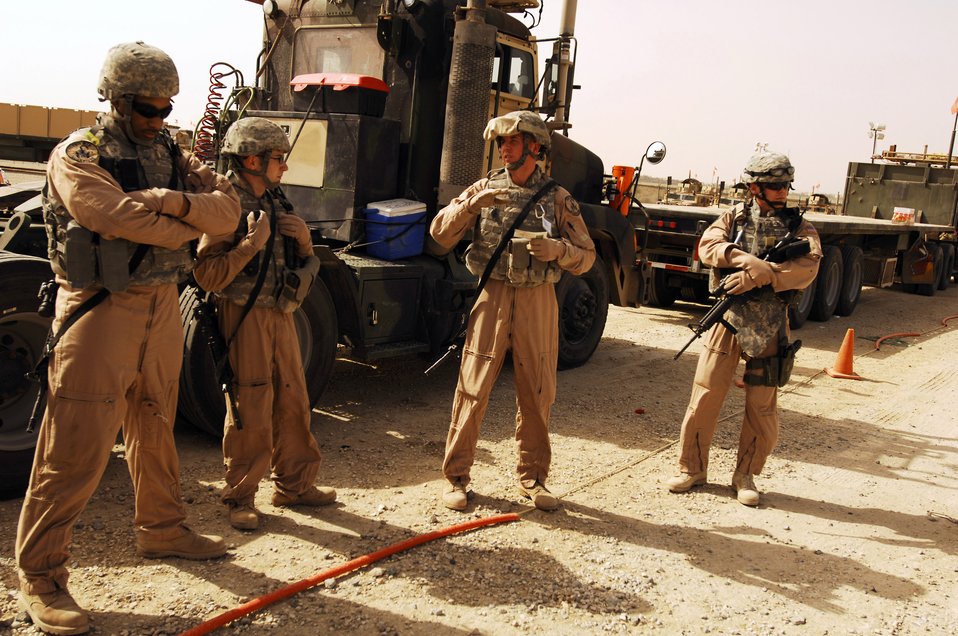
Combat truckers

Tech. Sgt. Scott Neu (center) gives a safety briefing before leading a recent convoy from an Army camp in Southwest Asia. The Airmen are in-lieu-of forces supporting the Army support line-haul convoy movements in and out of Iraq. Sergeant Neu is a convoy commander deployed from Eglin Air Force Base, Fla.